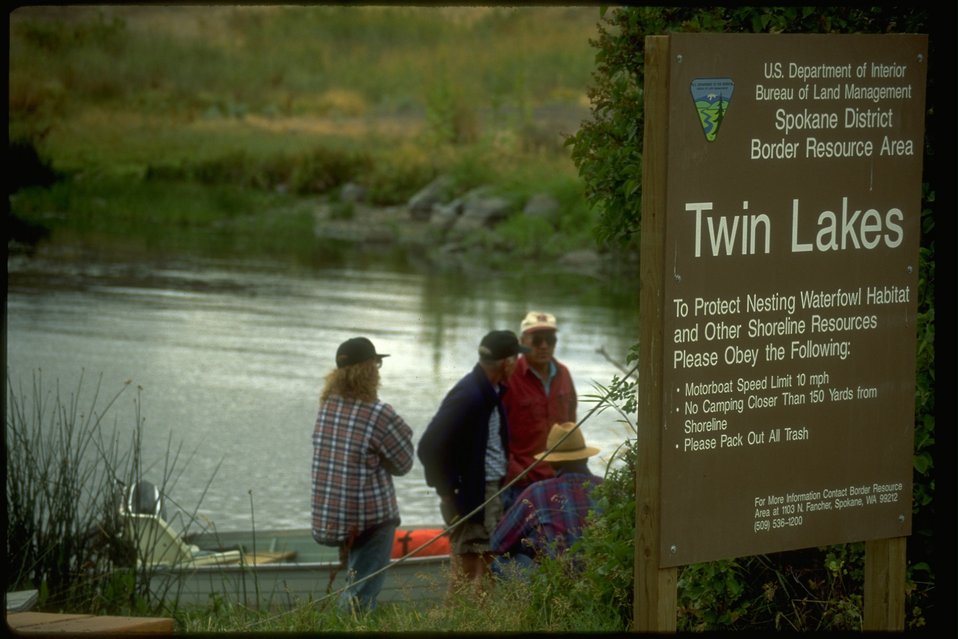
Fishing at Twin Lakes in Lincoln County, Washington.